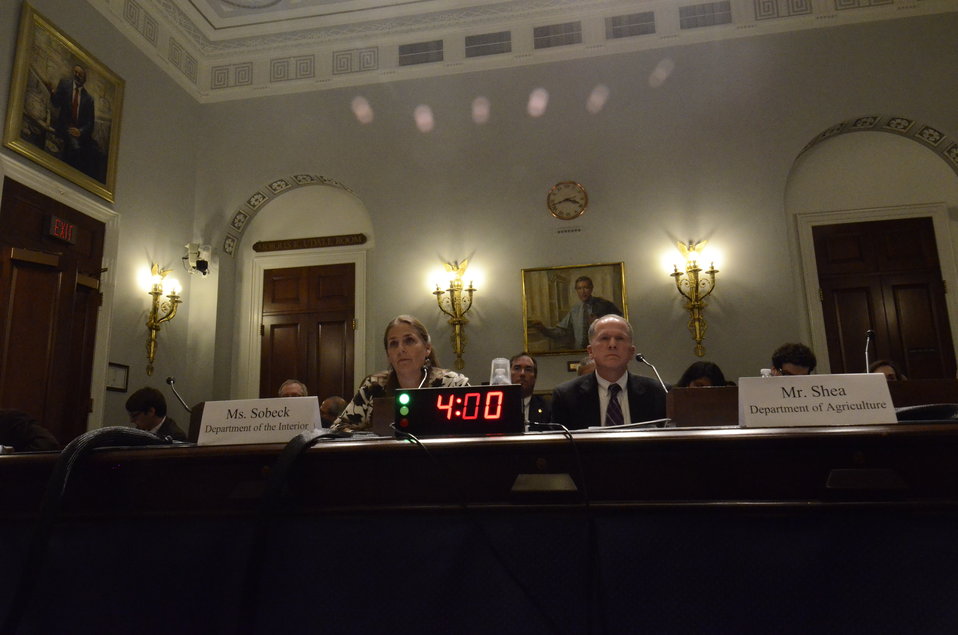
Interior Department Deputy Assistant Secretary for Fish and Wildlife and Parks Eileen Sobeck and Agriculture Department Animal Plant and Health Inspection Service (APHIS) Associate Administrator Dr. Kevin Shea speaking on Retailers & Entertainers Lacey Implementation & Enforcement Fairness Act & Freedom from Over-Criminalization & Unjust Seizures Act at the Longworth House Office Building in Washington, D.C. on Tuesday, May 8, 2012.